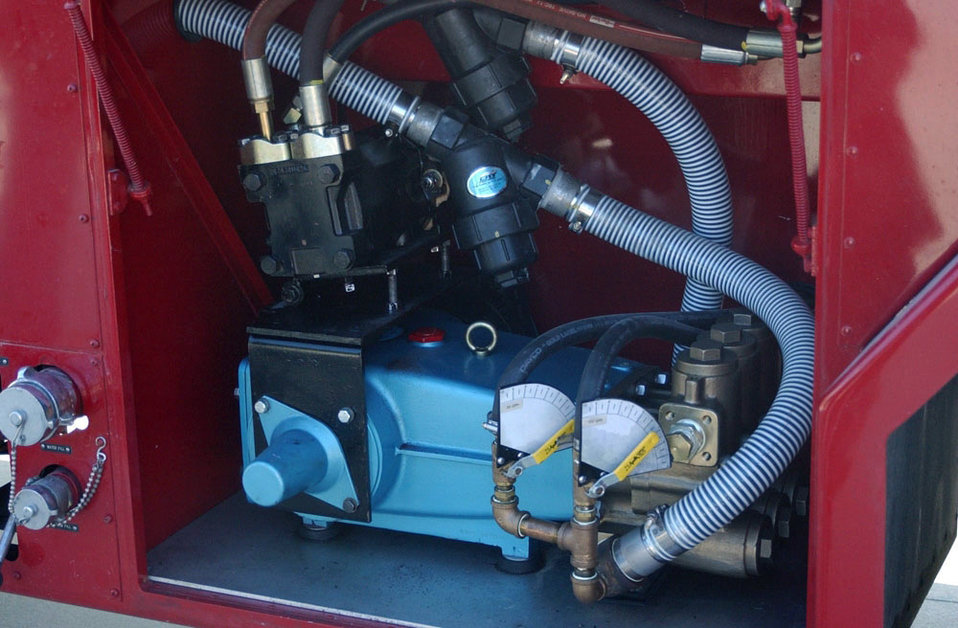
AFRL tests new firefighting technology

TYNDALL AIR FORCE BASE, Fla. -- The ultra-high pressure system piston pump and nozzles work together to make a more effective fire-extinguishing system by allowing carbon dioxide and water to mix. The higher pressure from the pump also increases the effectiveness of the carbon dioxide, making it more heat-absorbent. Ultimately, the smaller amounts of water required to extinguish fires could result in smaller firetrucks.